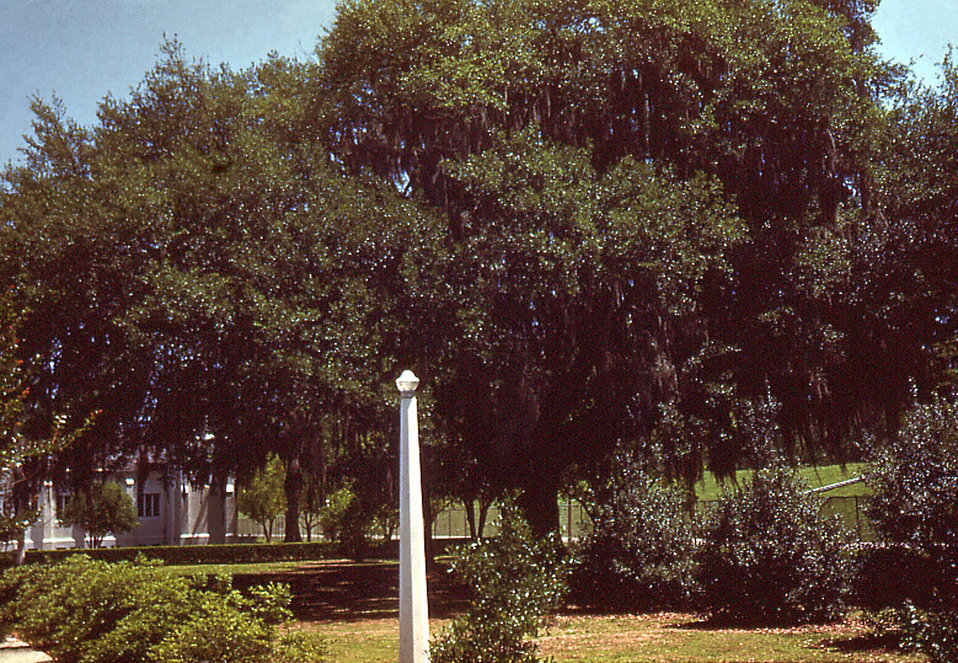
The grounds of the Carville Leprosarium sported a number of hardwood trees such as the giant oak tree depicted in this historic image, as well as many pecan trees."Patients of the U.S. Marine Hospital in Carville, Louisiana produced a set of 35 mm slides around 1950 from which this image was derived. In 2002, a patient's son donated the set, the only one known in existence, to the museum. The father, a patient at Carville for several years, brought these slides home around 1950 to give his family a snapshot of life at the national leprosarium. The act of quarantining patients for leprosy (HD) remained law in the state of Louisiana until 1957."